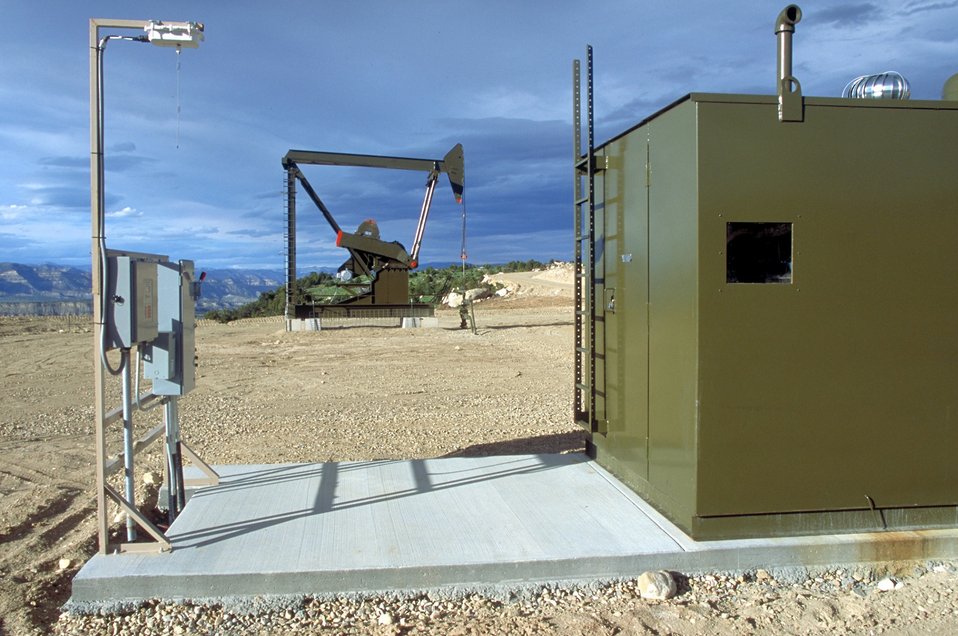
Pump unit producing coal bed methane near Price, Utah.